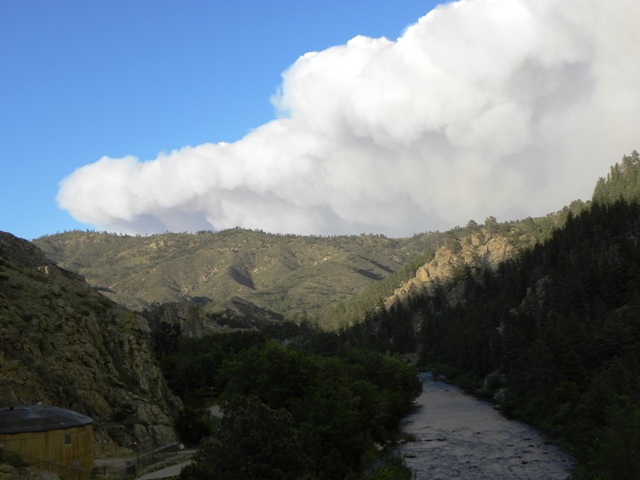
Smoke plumes rise in the distance from the High Park Wildfire on the Arapaho and Roosevelt National Forests and Pawnee National Grassland, Colorado, on Tuesday, June 11, 2012. The High Park Wildfire located approximately 15 miles west of Fort Collins, CO has consumed over 65,738 acres of forest and grassland with approximately 189 homes destroyed. Over 1,773 personnel from the U.S. Forest Service (FS), state and local resources are fighting the wildfire and have achieved 55% containment as of June 20, 2012. The High Park Wildfire began on June 9. 2012 because of a lightening strike on private land.